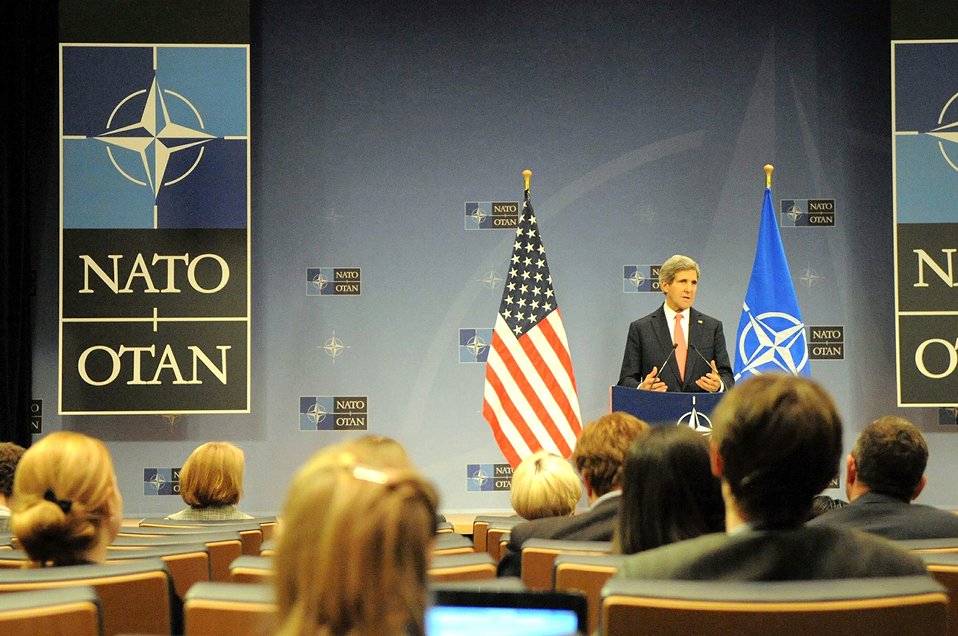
Secretary Kerry Addresses Reporters After a NATO Meeting

U.S. Secretary of State John Kerry addresses the international press corps during a news conference that followed a NATO Ministerial meeting in Brussels, Belgium, on December 3, 2013.